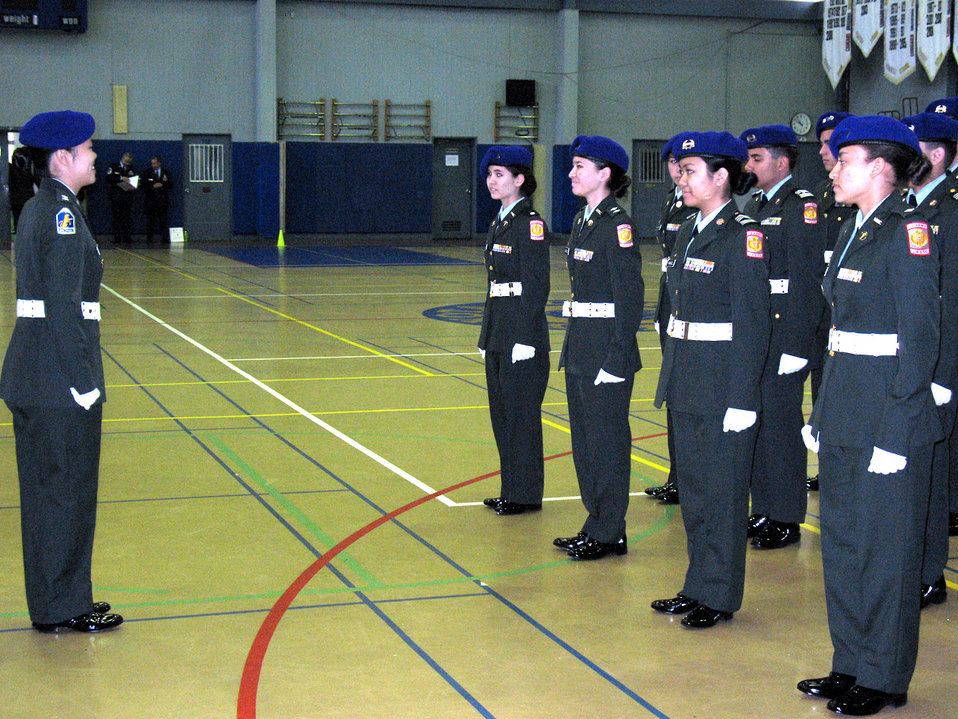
Yokota students show precision, dedication

Yokota Air Base High School Junior ROTC students compete in the Far East Drill Competition against students from other base high schools April 3 at Yokota Air Base, Japan. Students participated in the three-day event, which included armed and unarmed drill, marksmanship, and track and field.